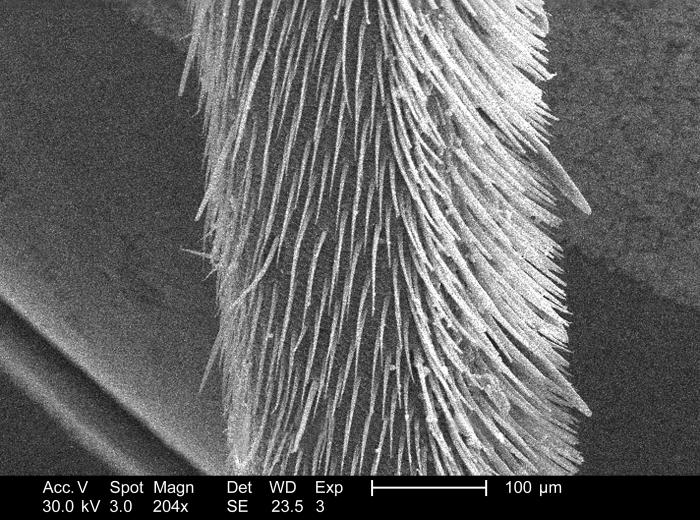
Magnified 204x, this 2005 scanning electron micrograph (SEM) revealed that this unidentified wasp's leg appendage bore many sensorial 'hairs', known as 'setae' on its cuticular surface. These hairs are sensitive to changes in the organism's environment including changes in temperature, wind speed and direction, chemical variations, and changes to the physical make-up of its surroundings, i.e., tactile interaction. These setae, along with the insect's antennae, eyes, and wings offer the organism a detailed comprehensive depiction of its immediate environment.